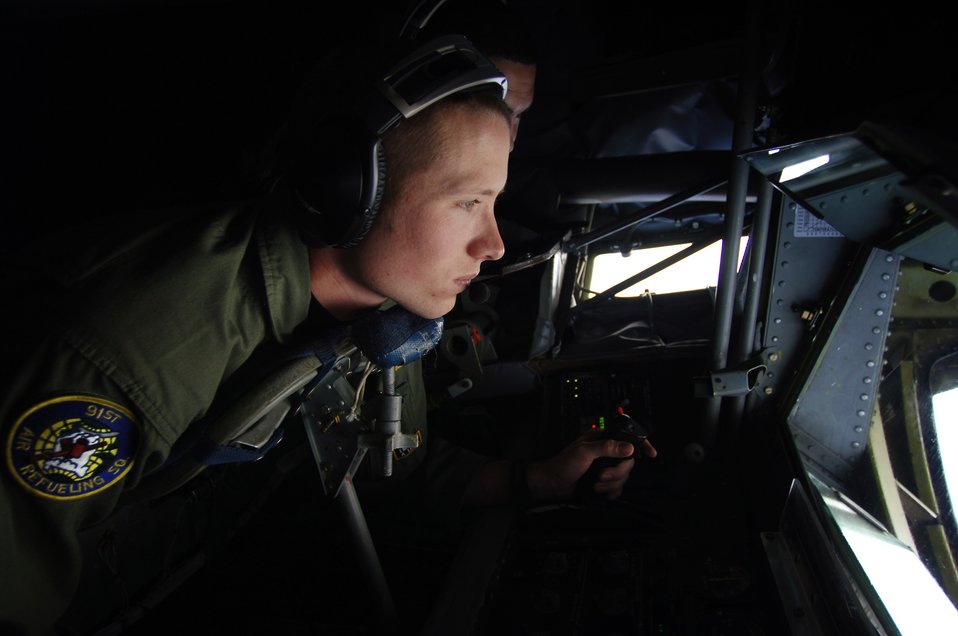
Airmen support counterdrug mission in Manta

OVER THE PACIFIC OCEAN -- Senior Airman Justin Hunter, a KC-135 Stratotanker boom operator, refuels an E-3 Sentry airborne warning and control systems aircraft over the Pacific Ocean near the west coast of Ecuador.